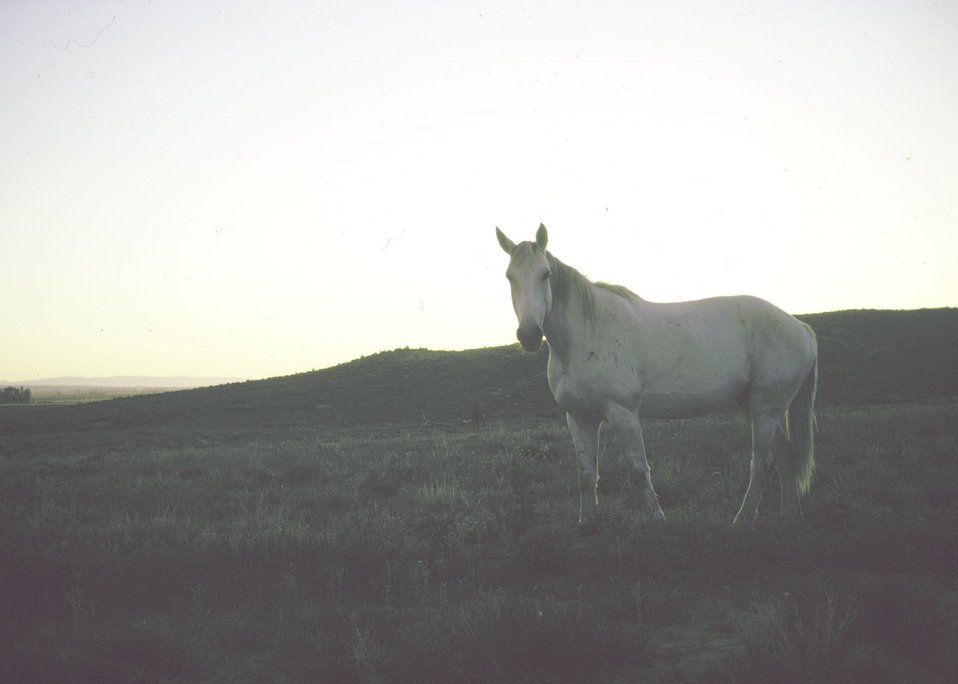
Wild horses on public lands in Wyoming.